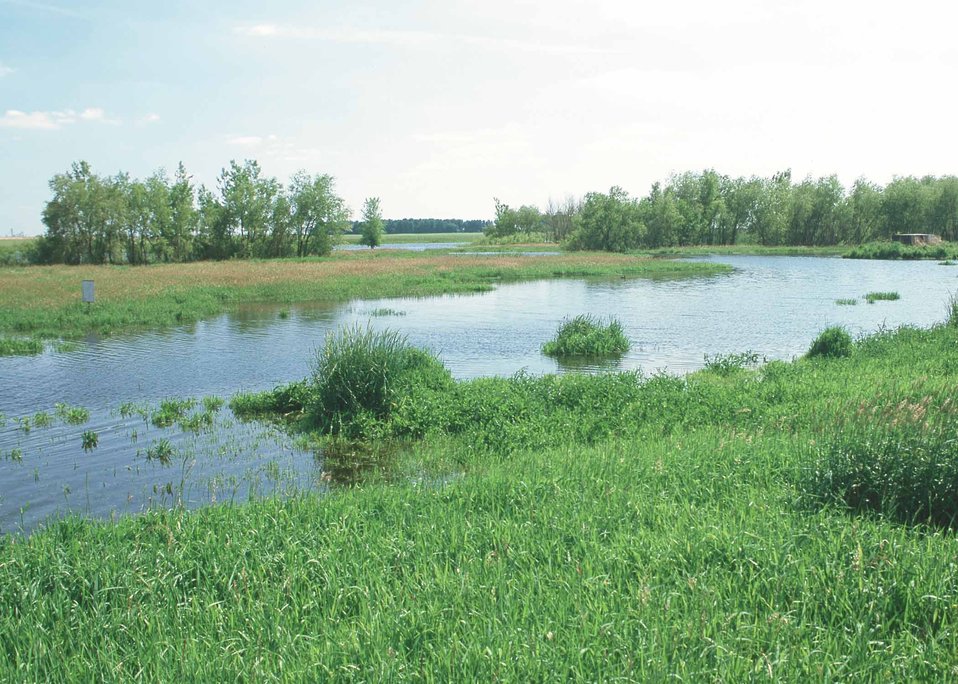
This WRP site in Worth County provides the landonwer many hours of outdoor recreation including bird watching and hunting.